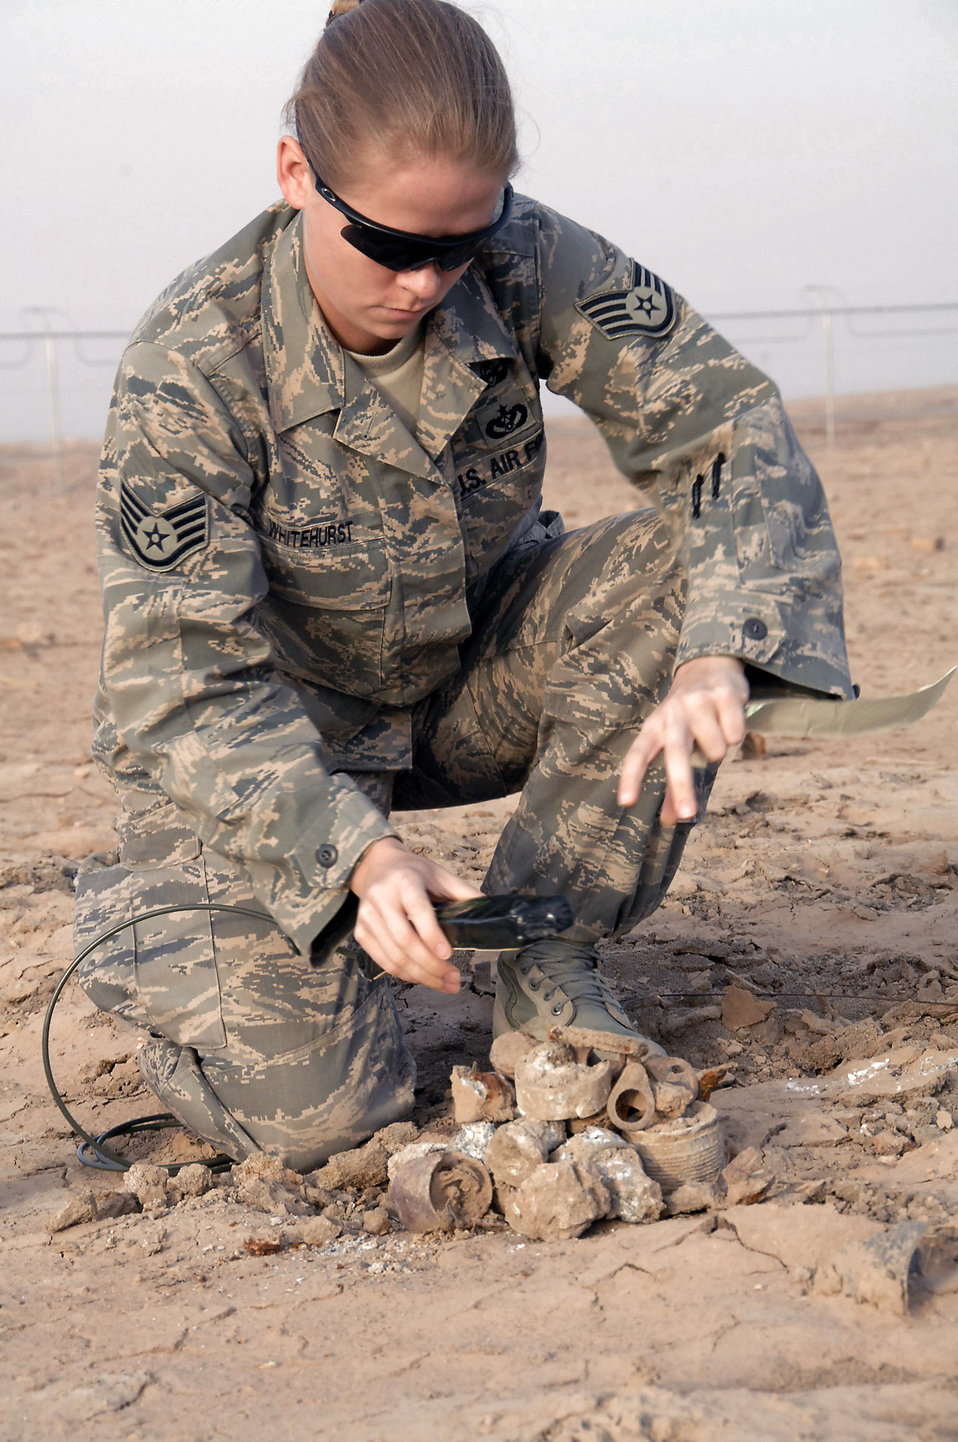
Picking up ordnance debris

Staff Sgt. Molly Whitehurst places C4 on hazardous ordnance items to be detonated March 26 at Ali Base, Iraq. An explosive ordnance disposal team scoured 159 acres of unexploded ordnance fields picking up debris and marking un-removable items for detonation. Sergeant Whitehurst is the 407th Expeditionary Civil Engineer Squadron Explosive Ordnance Disposal team chief and is deployed from Kadena Air Base, Japan.